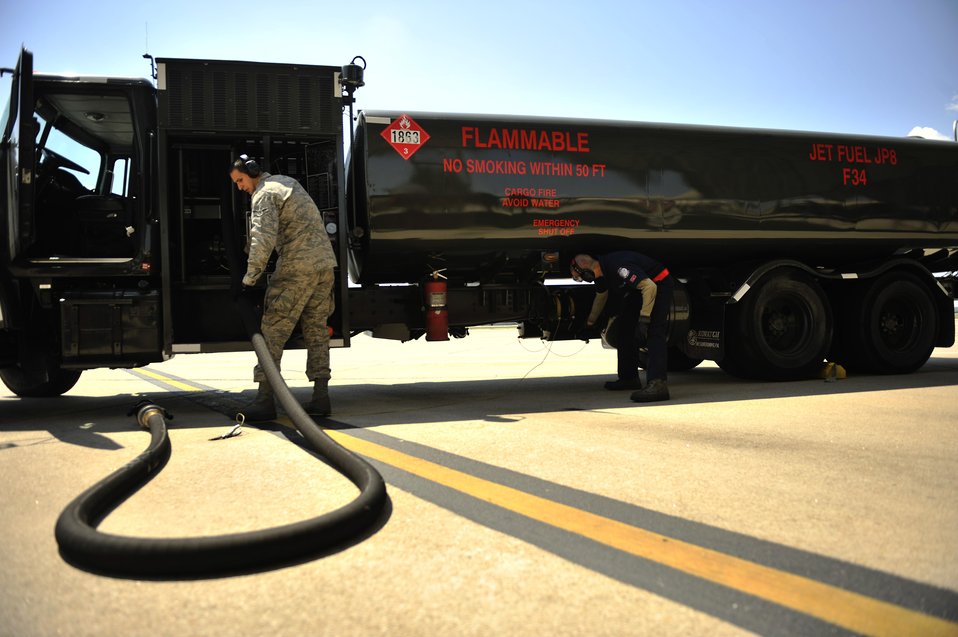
Mustang Mayhem

Airman 1st Class Timothy Schnitzer stows a refueling hose after refueling an F-15E Strike Eagle aircraft April 13, 2012, at Seymour Johnson Air Force Base, N.C. Airmen at the base are preparing for Mustang Mayhem on April 16 that will involve more than 70 F-15E Strike Eagles lining up on the runway to demonstrate the wing's capability to generate air power. The jets will then launch for an exercise modeled after a World War II battle 70 years ago. Schnitzer is assigned to the 4th Logistics Readiness Squadron.